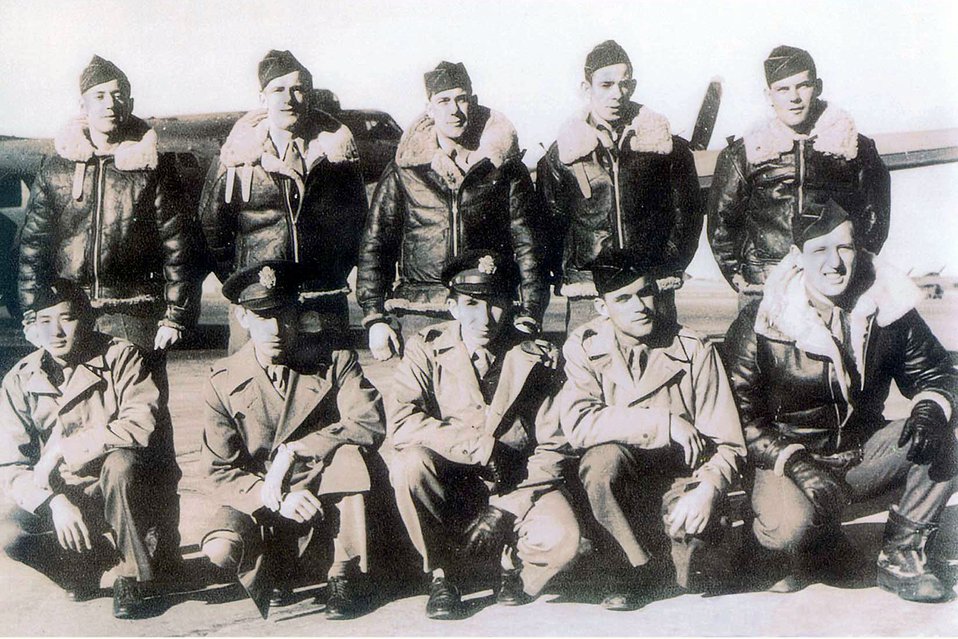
Purple heart

First Lt. Leo Bach (front, center) poses with aircrew members from the 381st Bomb Group. All crewmembers on Lieutenant Bach's B-17 Flying Fortress survived the attack from the German Luftwaffe.